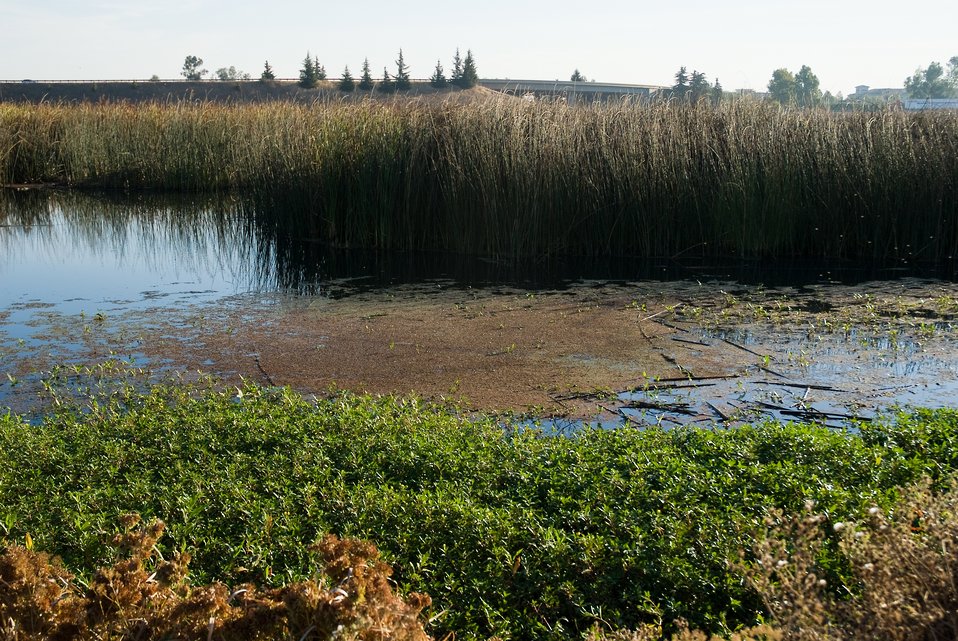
Stone Lakes National Wildlife Refuge is home for many special Central Valleybirds, animals and habitats. Currently, public access is limited to scheduled guided tours.We are currently working on providing regular public access at the headquarters unit Blue Heron Trails which is still under construction and scheduled to open late fall 2011.